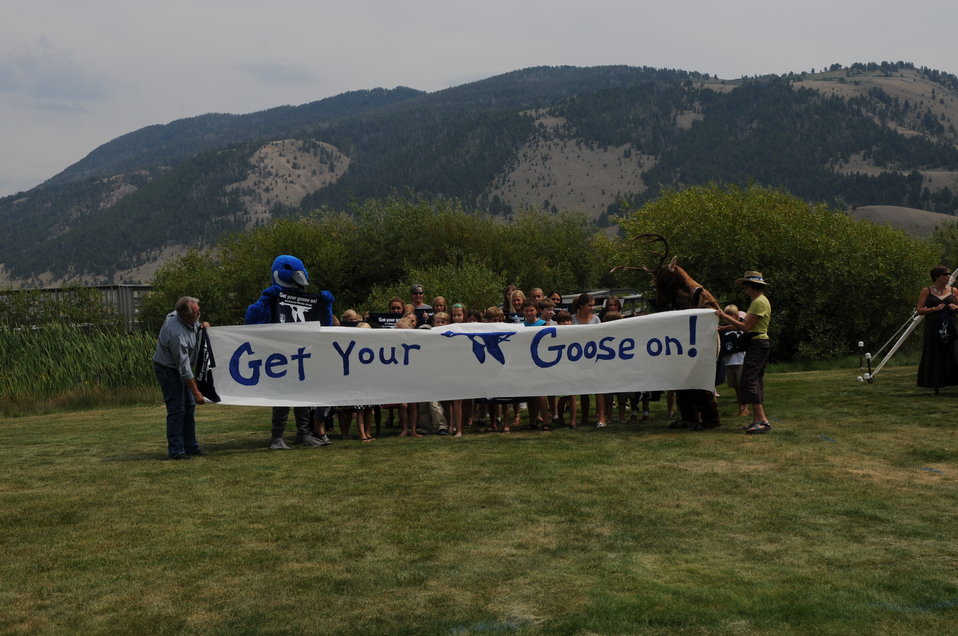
Prepping for a 'Get Your Goose On' Action Video Shot

At the conclusion of a special children's program featuring a presentation by Theodore Roosevelt impersonator Case Hicks, the young audience stood behind a banner made by USFWS Region 6 social media staffers Ryan Moehring and Kate Miyamoto. Seconds later, the banner was moved forward and the children ran through, breaking through the banner and waving their 'Get Your Goose On' towels. The blue goose is the symbol of the National Wildlife Refuge System. The 'Get Your Goose On' campaign was sponsored by the regional office with a variety of photo shoots taking place at other refuges.